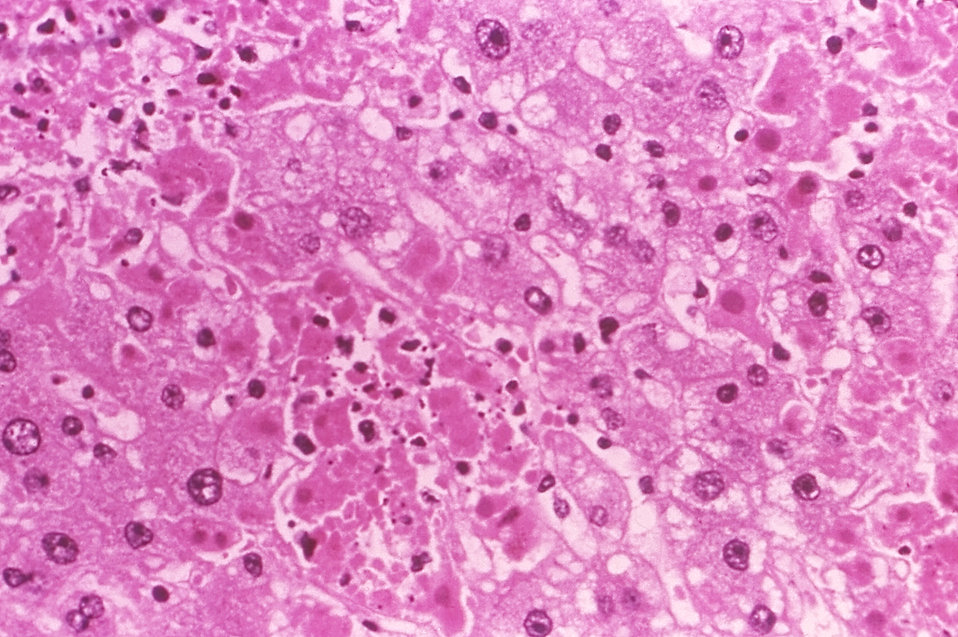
Under a moderate magnification of 250X, this hematoxylin-eosin-stained (H&E) photomicrograph depicts the cytoarchitectural changes found in a liver tissue specimen extracted from a Marburg disease patient in South Africa. This particular view reveals 'groups of cells at different stages of acidophilic necrosis, with some evolving into Councilman bodies. There are numerous basophilic bodies, as well as early fatty changes.'